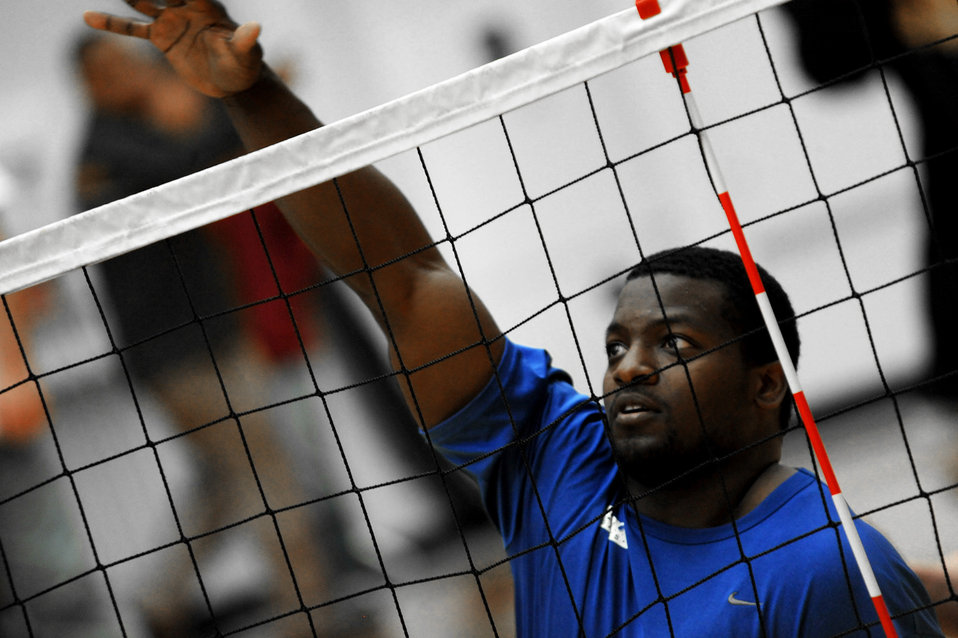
Warrior Games Volleyball

Air Force Warrior Games athlete, Matt Sanders, prepares to block the ball during the Warrior Games sitting volleyball match against Army at the U.S. Olympic Training Center in Colorado Springs, Colo., May 13, 2010.